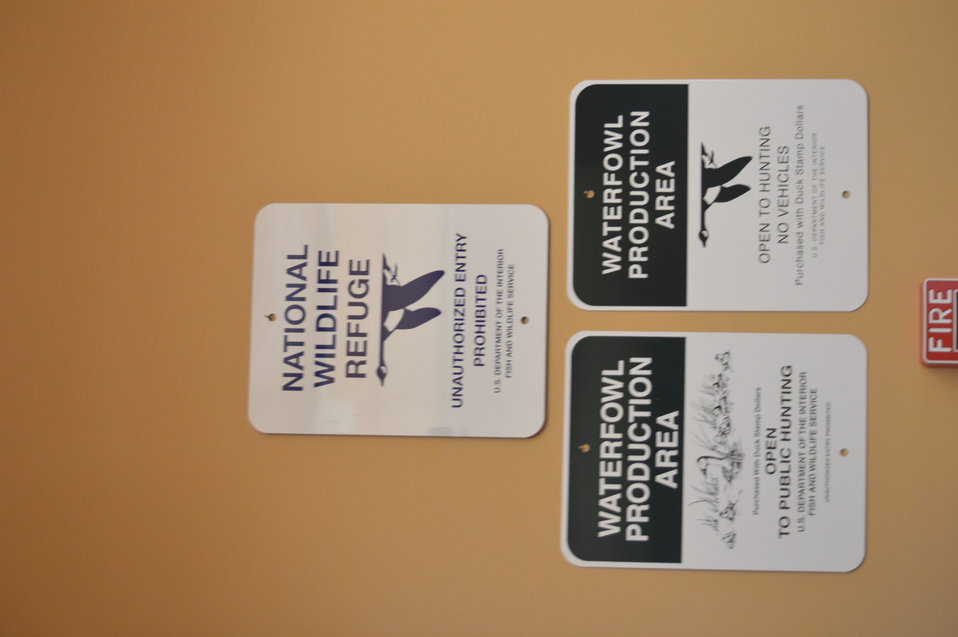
Refuge signs

Scenery and wildlife and Audubon National Wildlife Refuge in North Dakota.